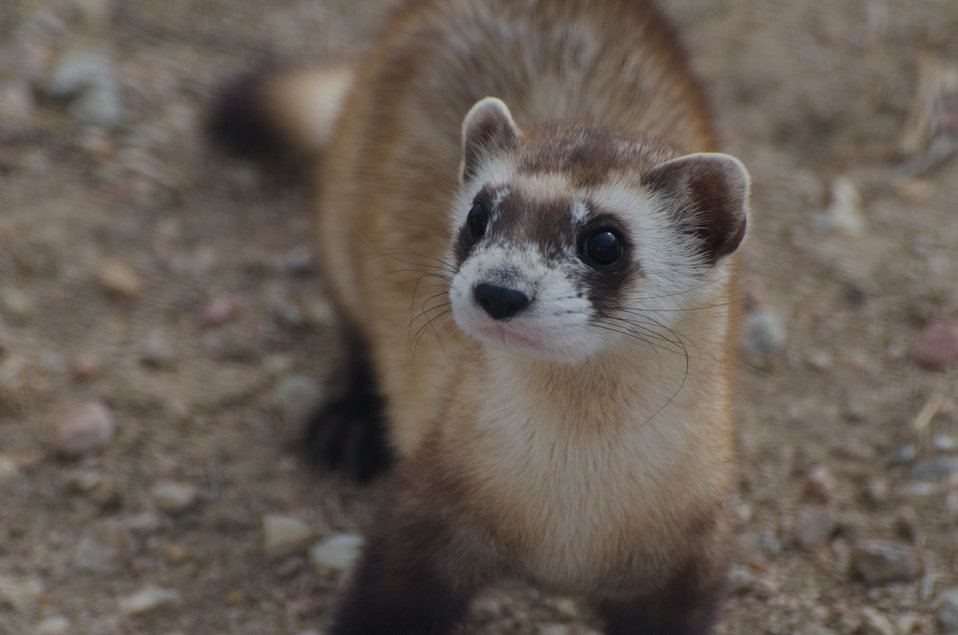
FERRET IN OUTSIDE PENS

A Black-footed Ferret waits for the daily feeding in the outside pens at the National Black-footed Ferret Conservation Center in Colorado.